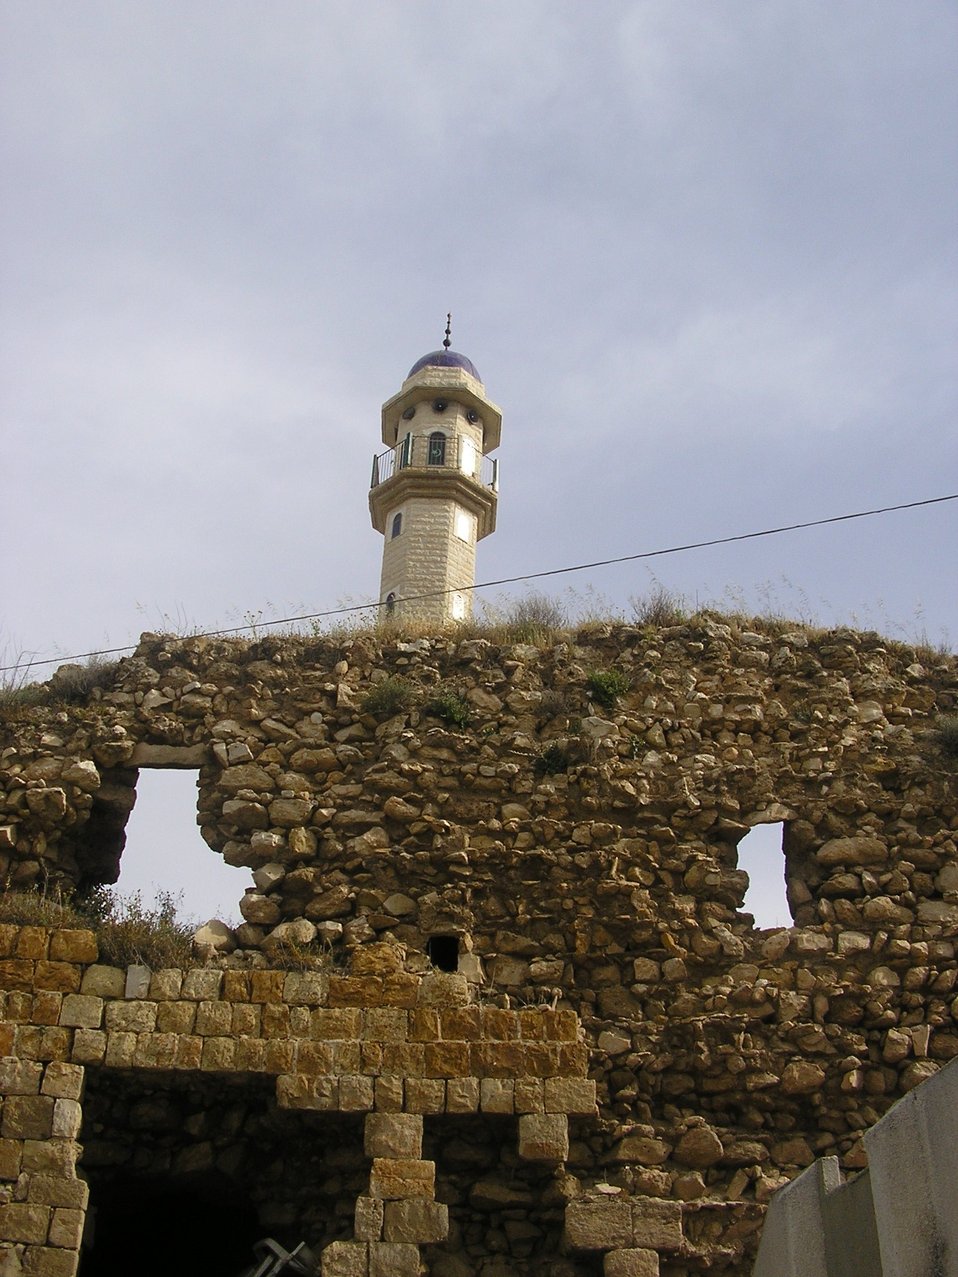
The remnants of the castle in Deir Hanna built by Daher El-Omar